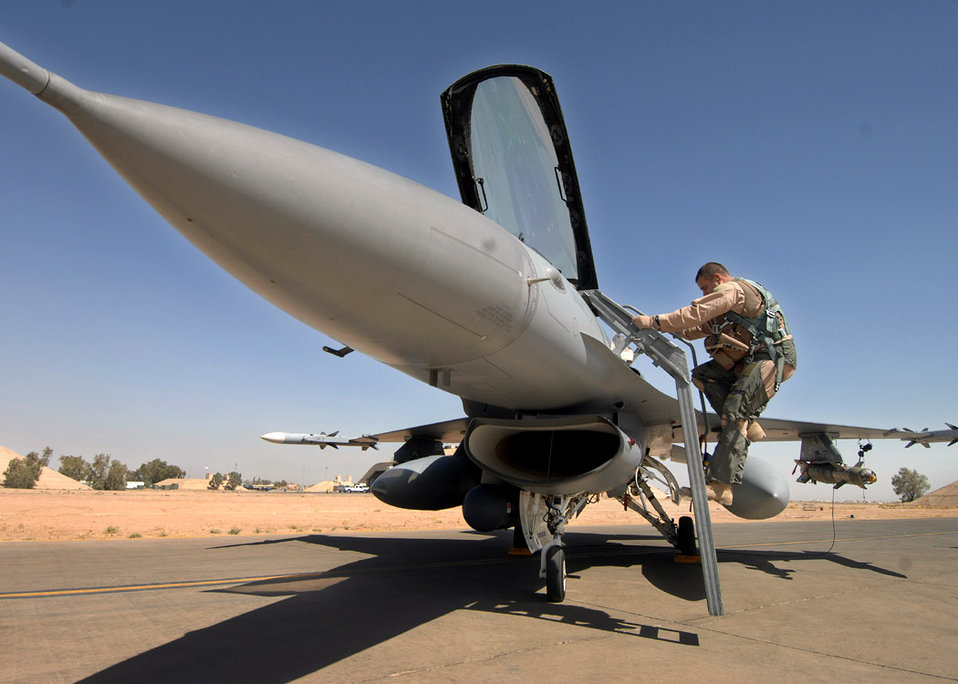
Airpower summary for Nov. 22, 2007

Maj. Brian Chamness climbs into an F-16 Fighting Falcon to fly a combat mission in support of Operation Iraqi Freedom. Major Chamness is with the 332nd Expeditionary Fighter Squadron at Balad Air Base, Iraq.